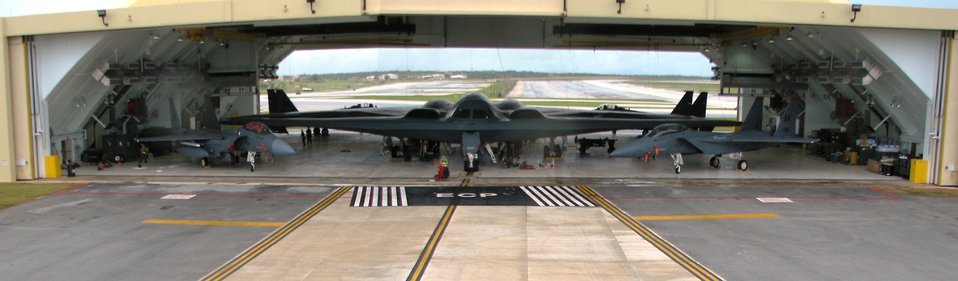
Tight fit

Two B-2 Spirit bombers and four F-15E Strike Eagles are parked inside Hangar 1 at Andersen Air Force Base, Guam, Aug. 6. The aircraft were moved into the hangar in preparation for a tropical storm that was expected to reach Guam that day. This was the first time the six aircraft had been parked in the hangar, proving to base officials that the hangar could accommodate the aircraft, and aiding in future tropical storm and typhoon planning. The two bombers are deployed to the 13th Expeditionary Bomb Squadron from the 509th Bomb Wing at Whiteman AFB, Mo. The fighters are deployed to the 90th Expeditionary Fighter Squadron from the 3rd Wing at Elmendorf AFB, Alaska.